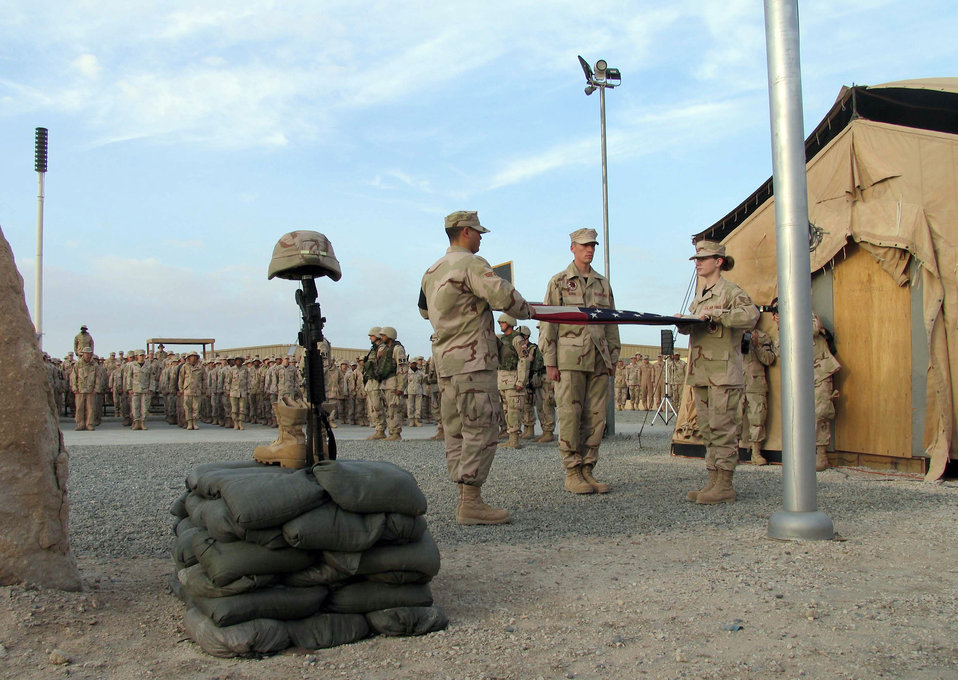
Memorial service held for fallen Airmen

SOUTHWEST ASIA (AFPN) -- The 386th Air Expeditionary Wing's honor guard folds the flag during a memorial retreat here for two fallen Airmen Jan. 27. More than 500 people attended the retreat which honored Tech. Sgt. Jason Norton and Staff Sgt. Brian McElroy. The Airmen were killed in Iraq by an improvised explosive device Jan. 22.